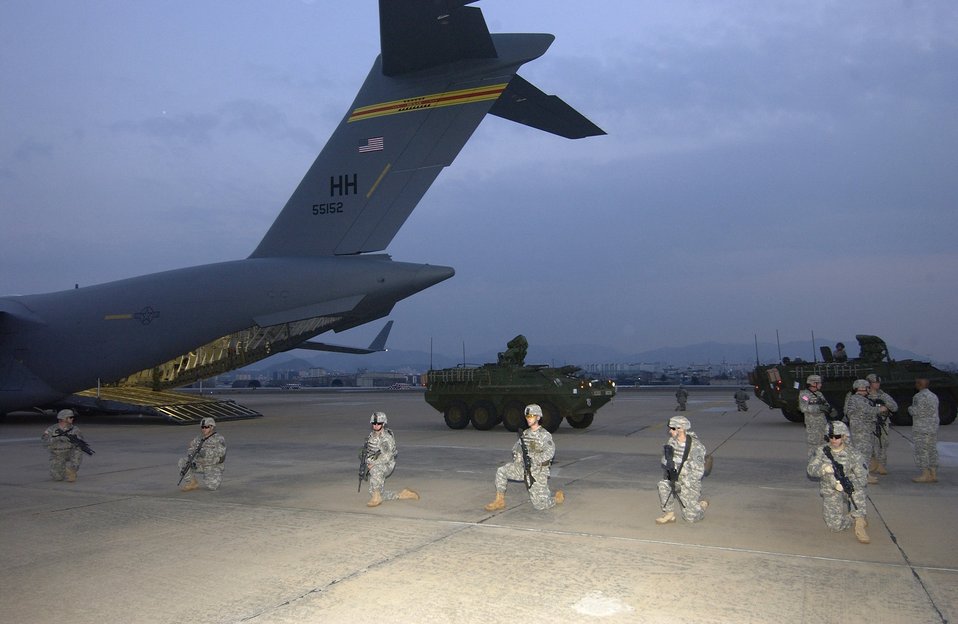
Globemaster delivers to Foal Eagle 2007

Soldiers from the 27th Infantry Division provide security as two M1126 Stryker infantry carrier vehicles are offloaded from a C-17 Globemaster III March 18 in Daegu, South Korea, for Exercise Foal Eagle 2007. The focus of the exercise is on strategic, operational and tactical aspects of general military operations in the Korean theater of operations. Its intent is to demonstrate resolve to support the Republic of Korea against external aggression while improving ROK - U.S. combat readiness and joint and combined interoperability. The C-17 is from the 15th Airlift Wing at Hickam Air Force Base, Hawaii.